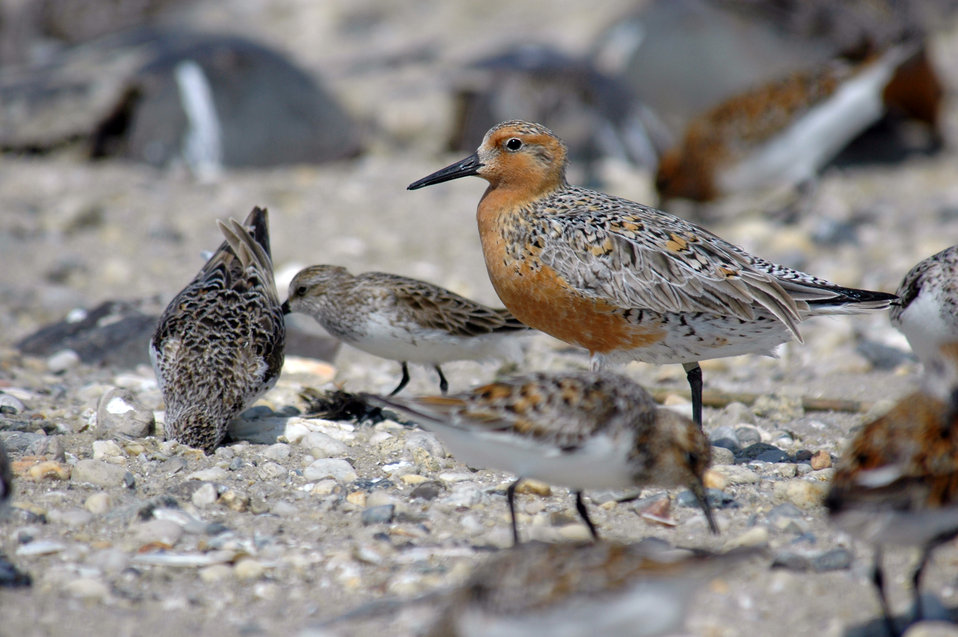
Red Knot

Mispillion Harbor, Delaware.